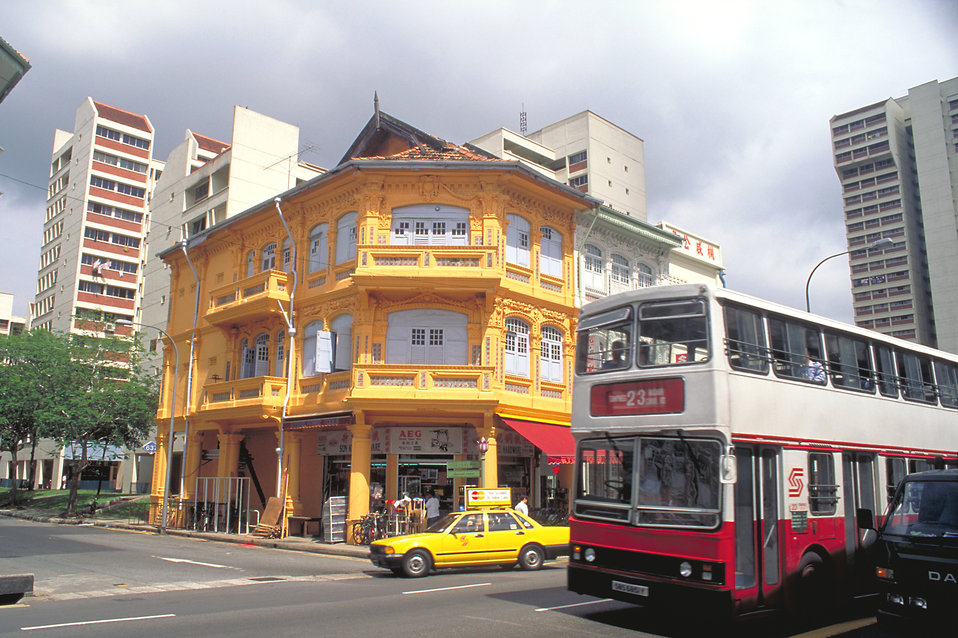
This 1995 photograph depicted a typical street corner in Singapore with older colonial-style buildings in the foreground, and some recently-built skyscrapers in the background. Singapore is an island city-state located on the southern tip of the Malay Peninsula. Visible in this photo was a double-decker bus and a taxi cab, but no private automobiles. As a result of public transport availability, i.e., nearly 50% of the population uses mass transit it on a daily basis, and environmental initiatives, Singapore's air is notable for its lack of pollution.The city's citizens enjoy good health by international standards. According to the World Health Organization, rising standards of living, high levels of medical services, and the active promotion of preventive medicine have had a positive effect. Singapore is becoming a popular tourist and business destination. It is important for all travelers to be aware of the potential health hazards in any destination, foreign or domestic.